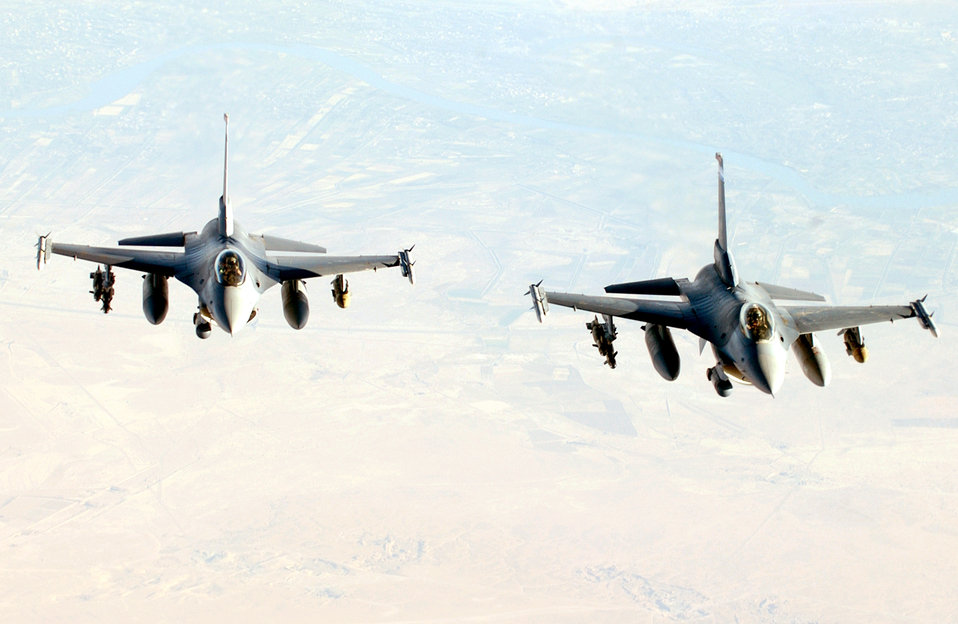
On the job

OVER IRAQ -- Two F-16 Fighting Falcons fly through the sky during a combat mission here July 23.